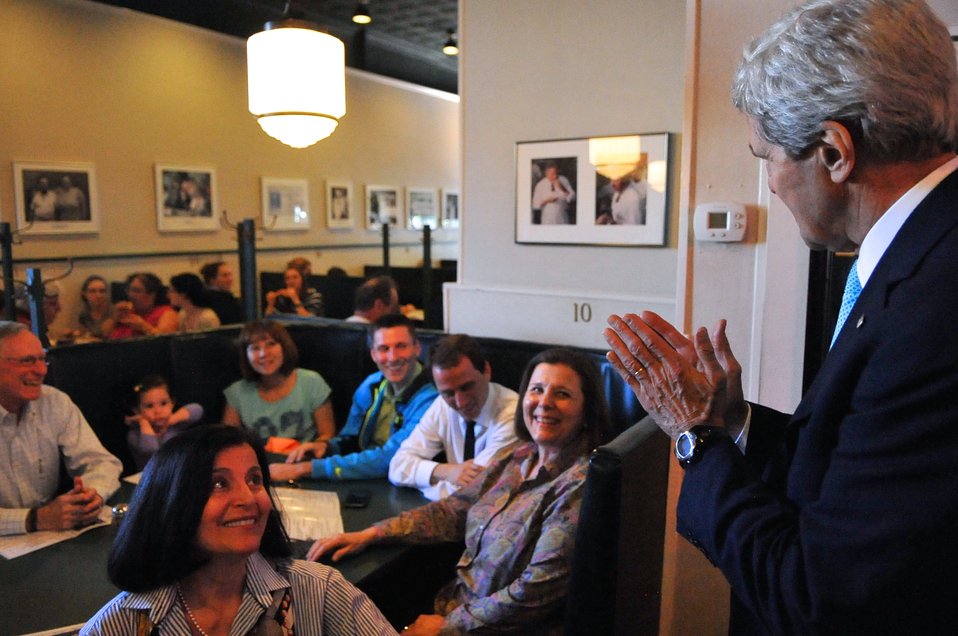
Secretary Kerry Says Hello to a Yale University Student and His Family at New Haven Pizza Shop

U.S. Secretary of State John Kerry says hello to a Yale University senior and his family as he awaited a takeout order at the famed New Haven, Connecticut pizza shop Frank Pepe's during an impromptu stop after the 1966 graduate addressed Class Day ceremonies on May 18, 2014.